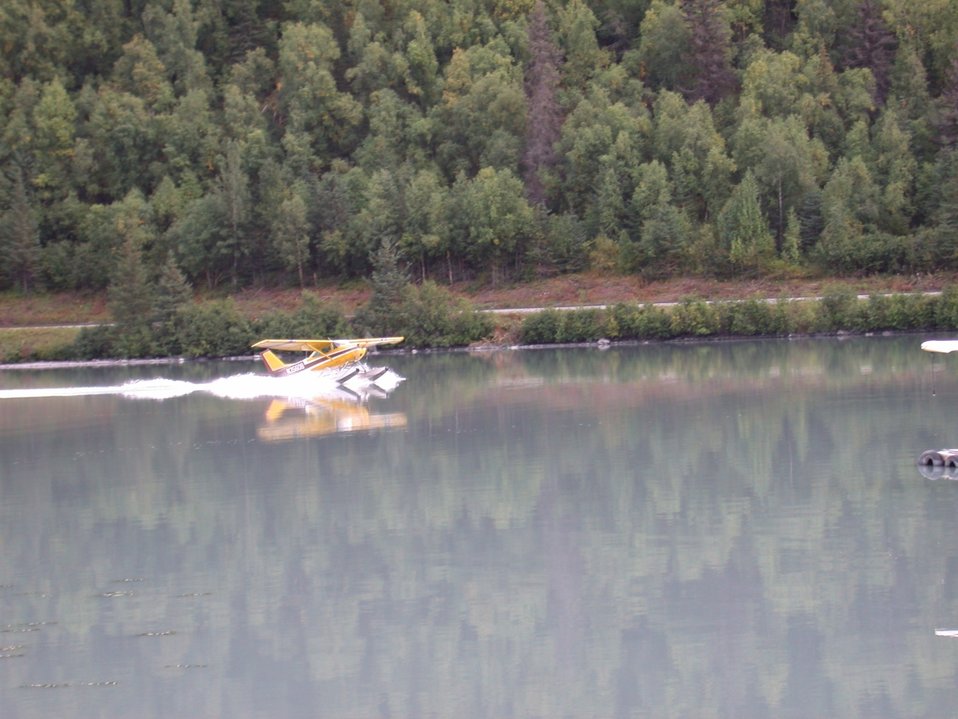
Float plane landing in glacier melt lake.